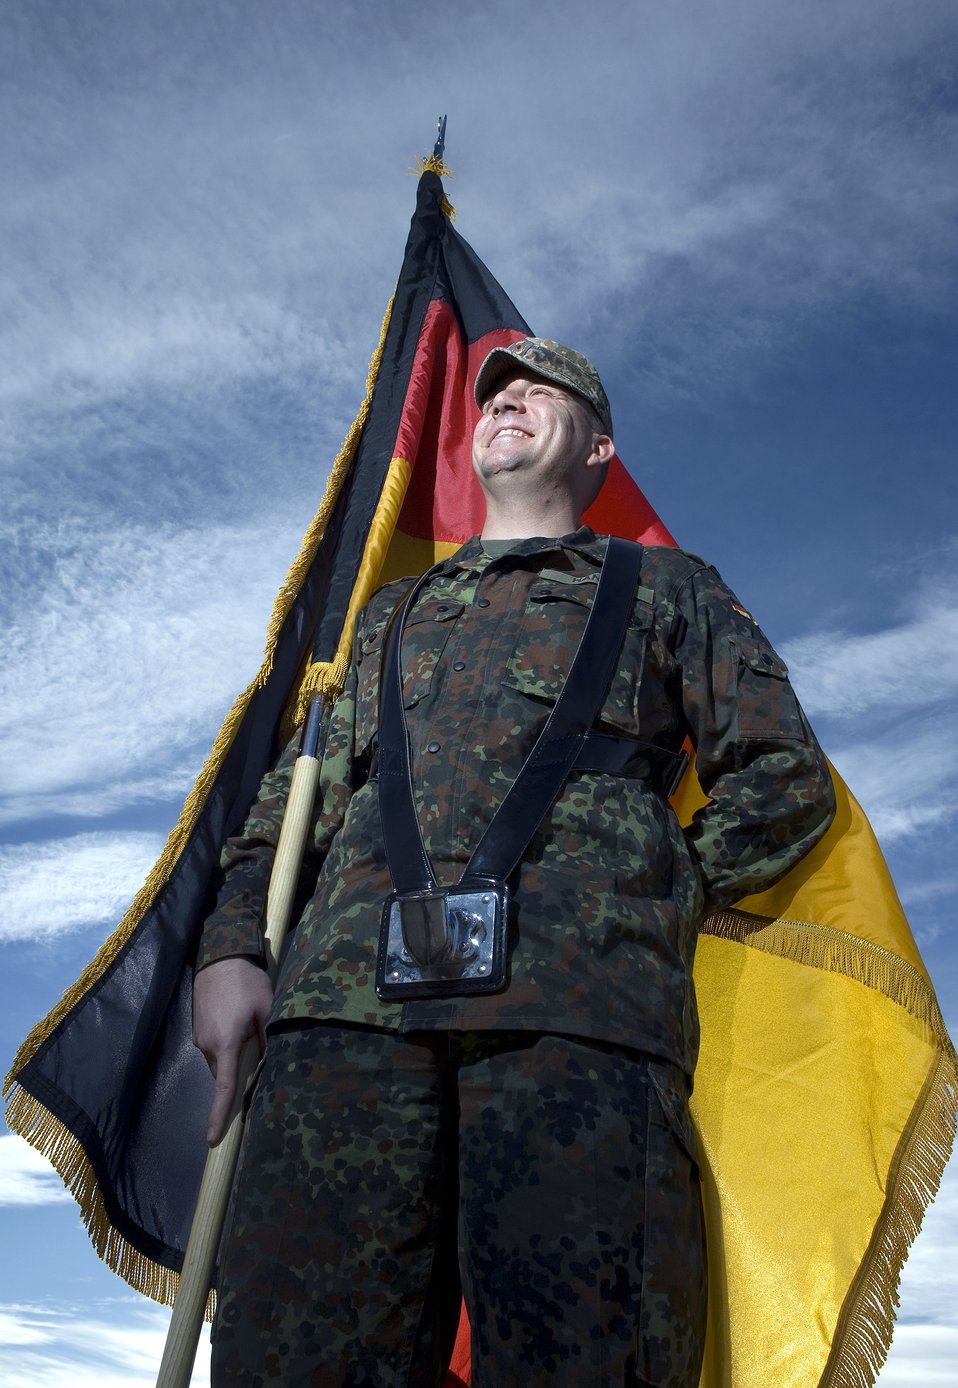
German airman assists with Holloman ceremony

German air force Senior Airman Steffen Hanke holds the German flag while training with U.S. Air Force honor guard members of the 49th Mission Support Squadron Jan. 15 at Holloman Air Force Base, N.M. Airman Hanke was selected to join the base honor guard team and has more than seven years of honor guard experience with the German air force. Holloman AFB is host to the German Air Force Tactical Training Center with more than 300 German air force members stationed there. Germany is one of the strongest allies of the U.S. in NATO and the joint training is important for allied armed forces to train together to ensure effectiveness when called upon to serve together.